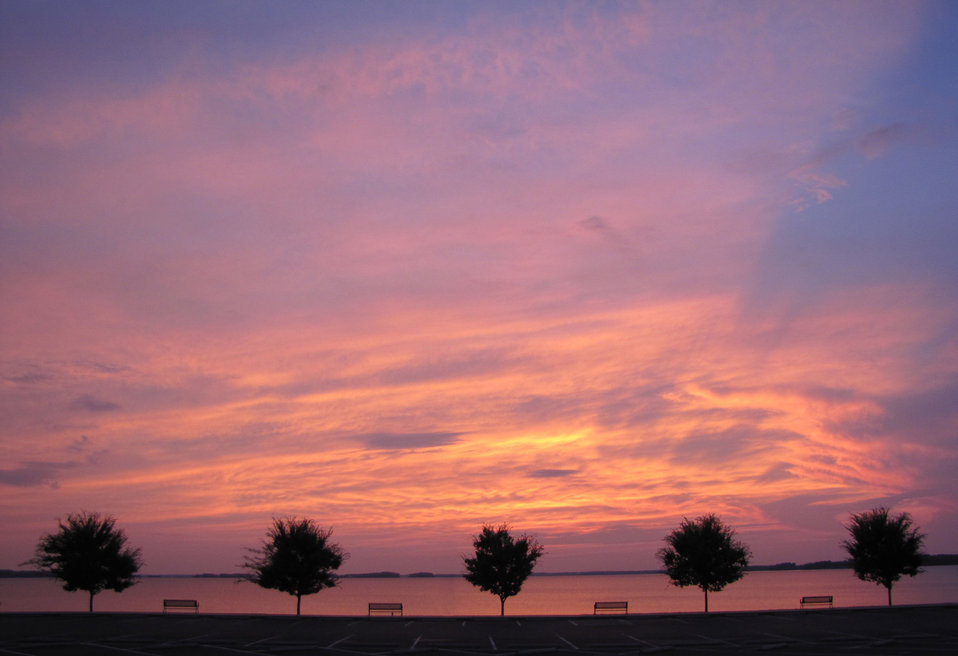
Beyond the sunset

Back light from the sunset.